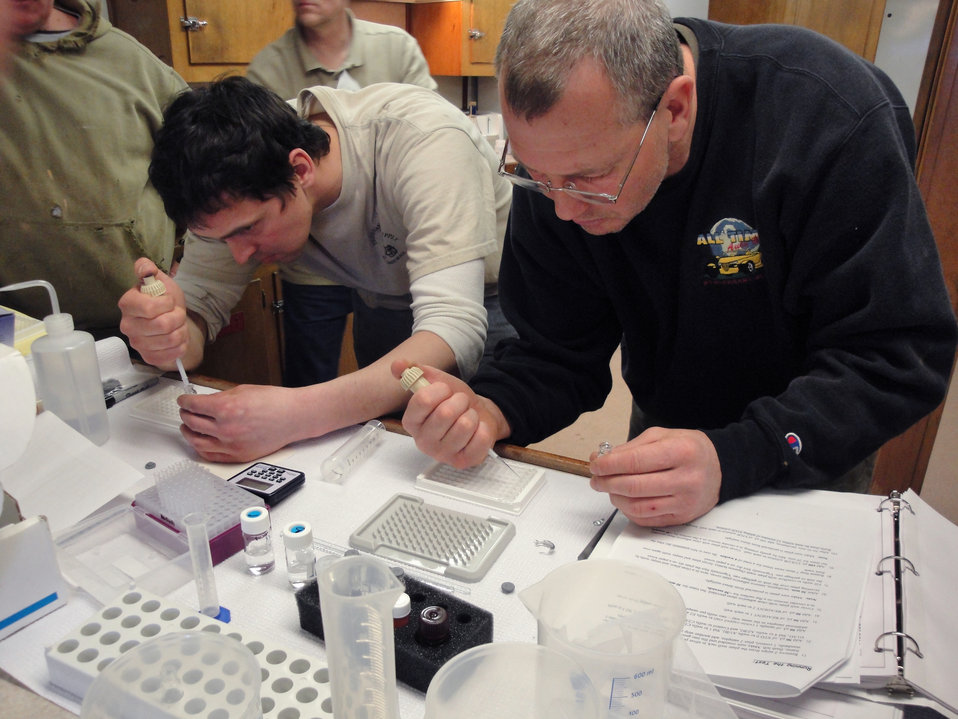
Clam Harvest: Testing at Sea

Fishermen Mikhail Shablin (left) and Robert Clement (right) perform scientific lab tests aboard the F/W Melissa K, making the initial determination about whether the clams they just caught are safe to eat. The men were trained by FDA staff.

Fishermen trained by FDA scientists are performing sophisticated lab tests on clams while far out to sea -- a novel approach that has allowed the reopening of thousands of miles of ocean to clamming off the coast of New England.

• Novel Program Restarts Clam Harvest